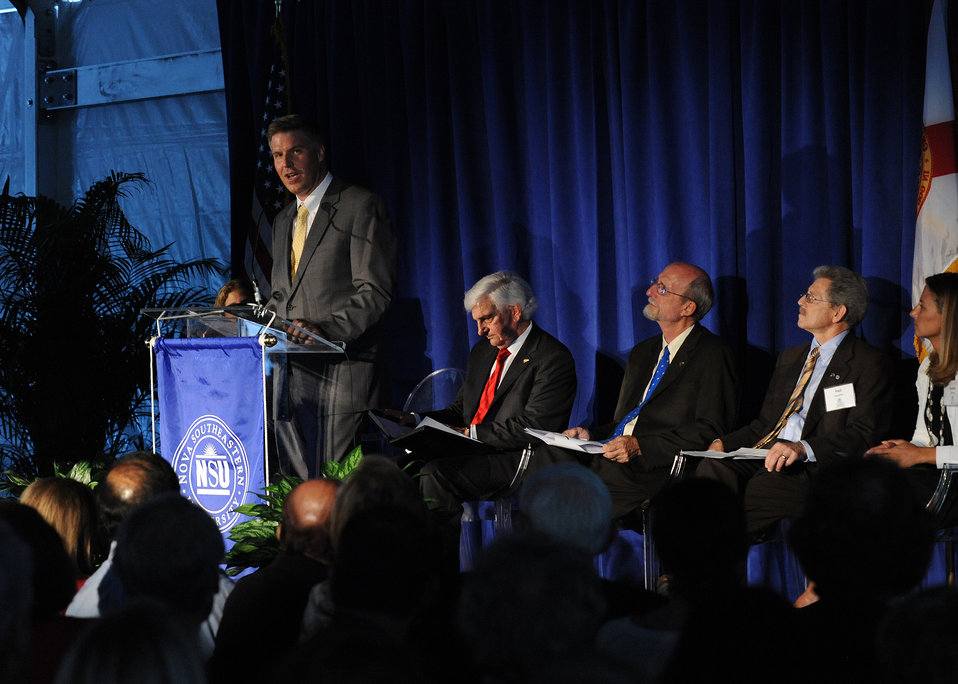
Opening Ceremony of NOVA Southeastern University’s (NSU) Center of Excellence for Coral Reef Ecosystem Research

NIST Director Dr. Patrick Gallagher (far left) participates at opening ceremony of NOVA Southeastern University’s (NSU) Center of Excellence for Coral Reef Ecosystem Research funded in part by an American Recovery and Reinvestment Act grant from NIST. Other presenters on dais from right to left: Elizabeth Larson, NSU Phd candidate; Paul Sandifer, NOAA; Richard E. Dodge, Dean NSU Oceanographic Center, NSU; George L. Hanbury II, President NOVA Southeastern University.